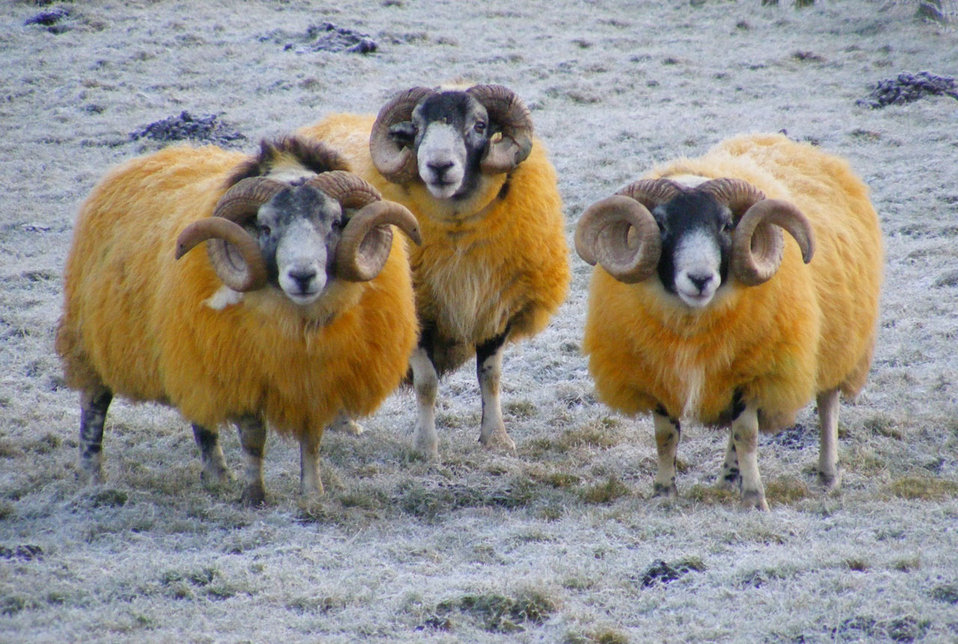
Yellow sheep

Sheep in winter - scottish borders.